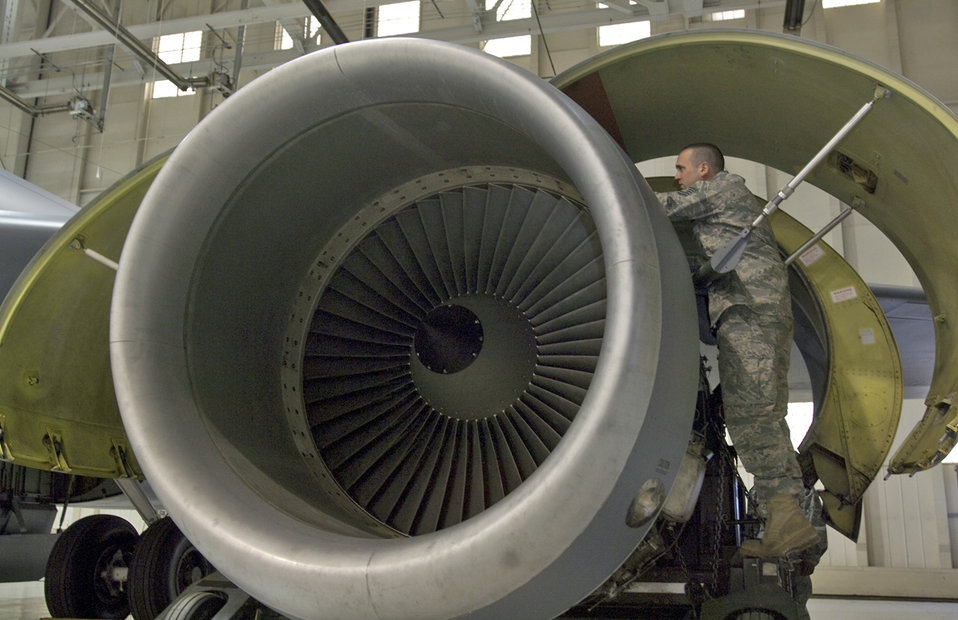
Maintainers remove 26-year-old engine

Tech. Sgt. Stefan Sianis inspects a KC-135R Stratotanker F108-100 engine before it?s lowered from the aircraft March 3, 2010, at McConnell Air Force Base, Kan. Sergeant Sianis is a mechanic assigned to the 22nd Aircraft Maintenance Squadron.